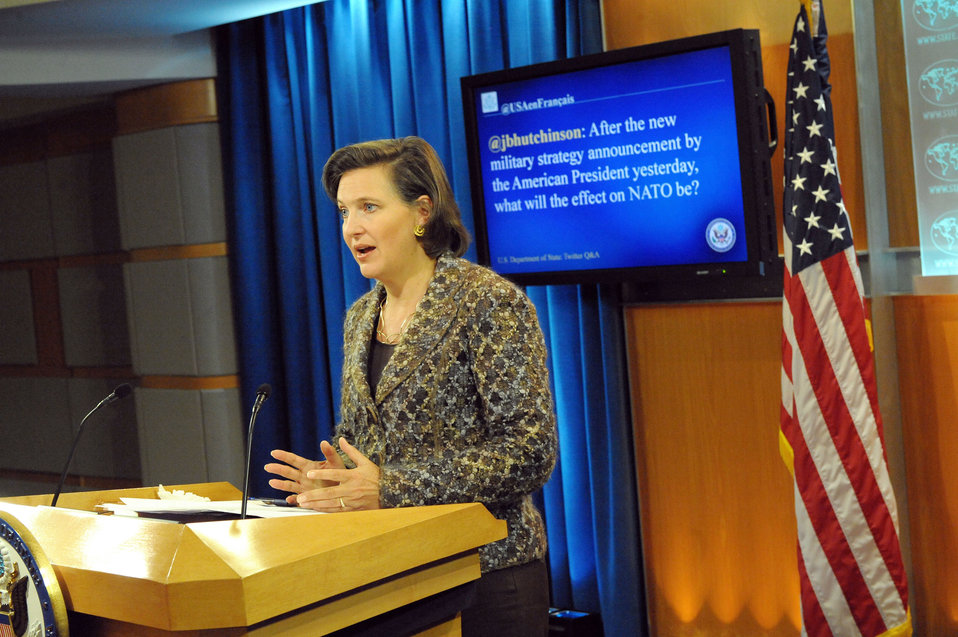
Spokesperson Nuland Responds to a Question from @USAenFrancais

Victoria Nuland, Spokesperson for the U.S. Department of State, answers a question selected from the Department’s official French Twitter feed, @USAenFrancais, on January 6, 2012.